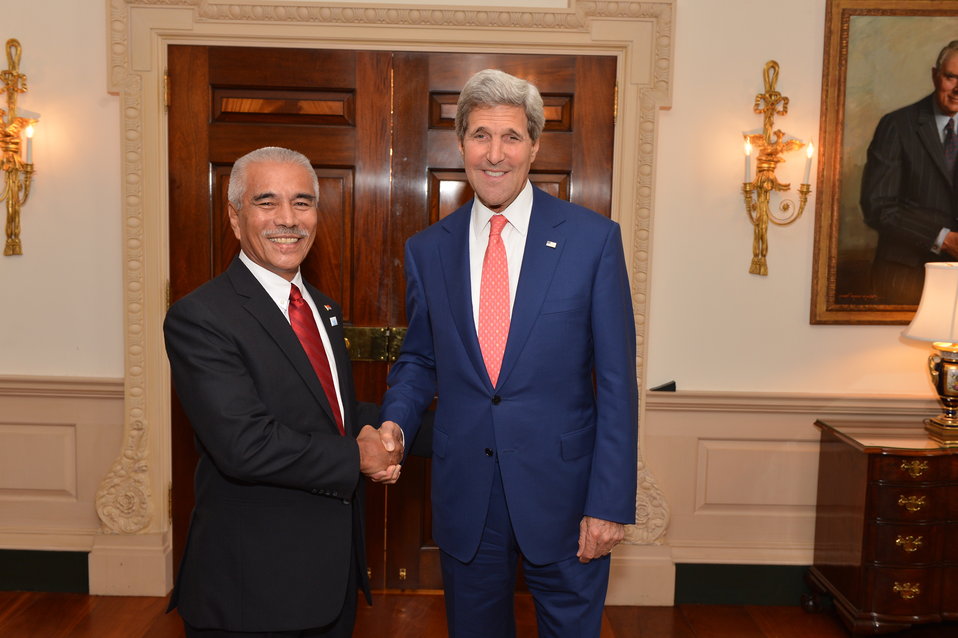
Secretary Kerry Shakes Hands With President of Kiribati Anote Tong

U.S. Secretary of State John Kerry meets and shakes hands with President of Kiribati, Anote Tong at the U.S. Department of State in Washington, D.C. on June 16, 2014.